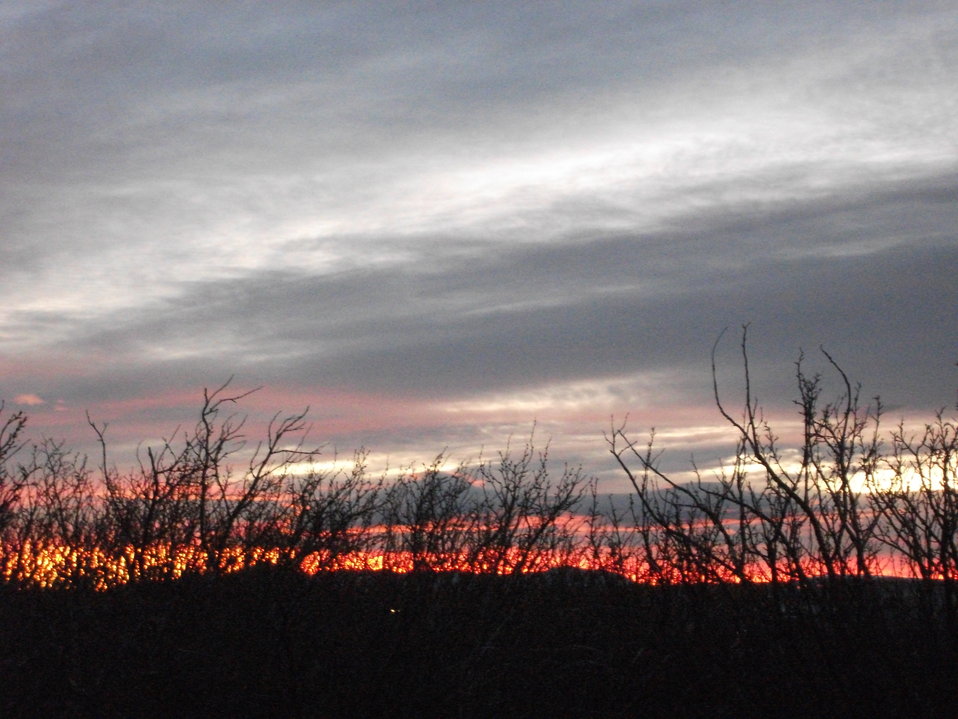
Sunrise On The Refuge

We get some amazing sunrises at the Refuge. You can see why Montana is nicknamed 'Big Sky Country!'